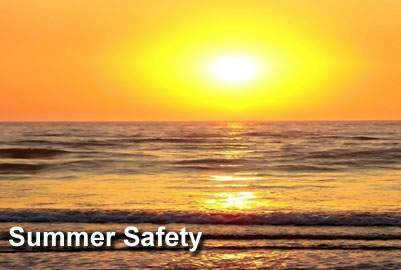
Airman's Roll Call: Summer Safety

This week's Airman's Roll Call focuses on the 101 critical days of summer, the period between Memorial Day and Labor Day.